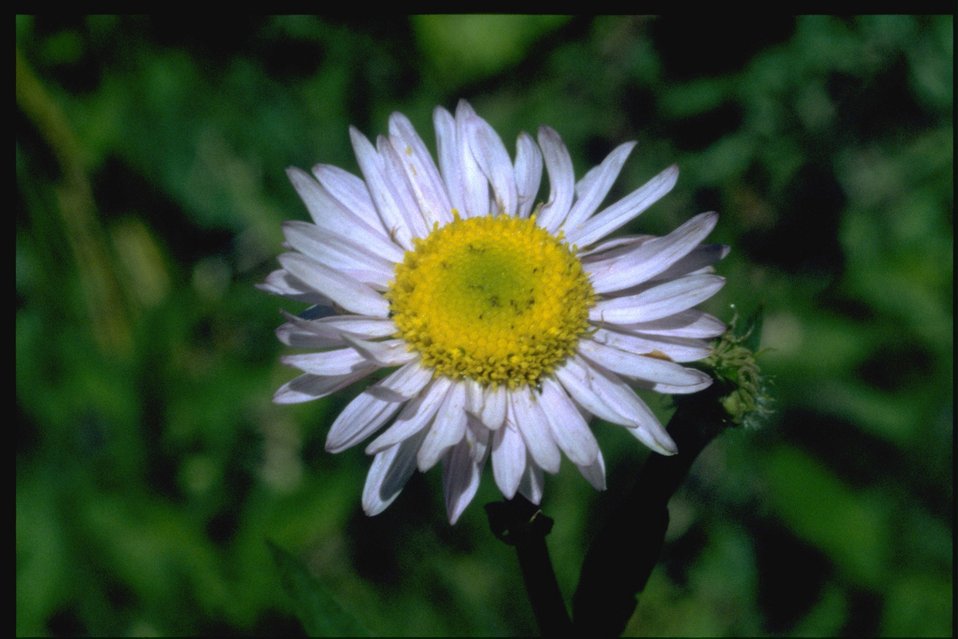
Closeup shot of wildflower (Asteraceae).